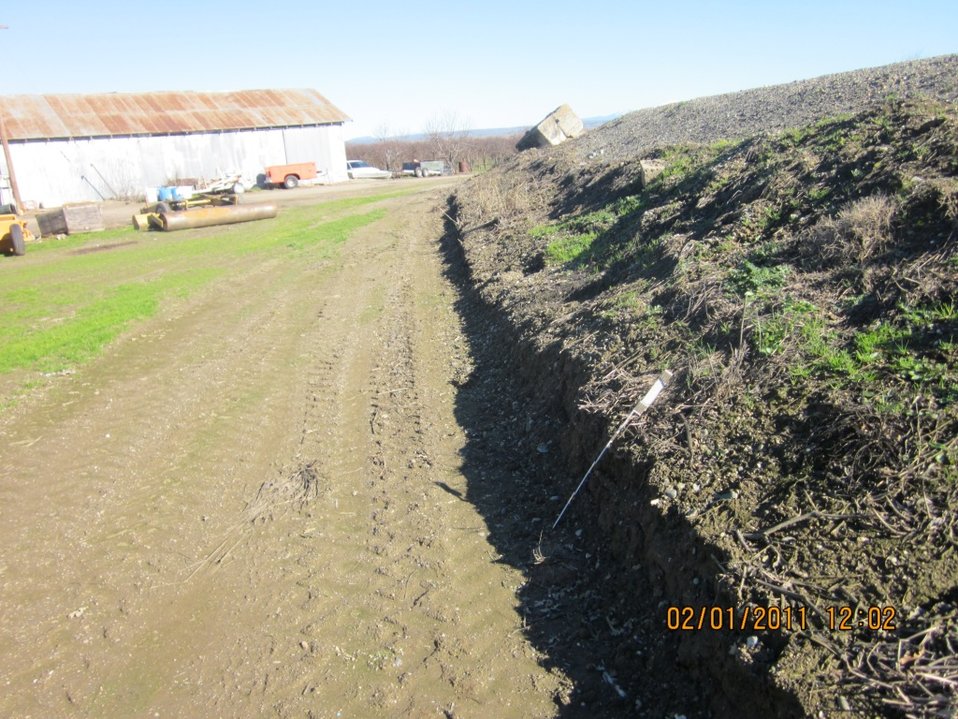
Road cut in a Gerber-area levee

A road encroaches on the toe of a levee in the Gerber, Calif., area, shown during a levee inspection in February 2011. The U.S. Army Corps of Engineers inspects levees in its Rehabilitation and Inspection Program to ensure levees don’t pose an unacceptable risk to lives and to provide levee managers and residents with detailed information on the condition of levees to help them make informed decisions about safety.